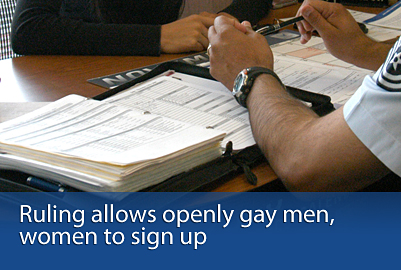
Ruling allows openly gay men, women to sign up